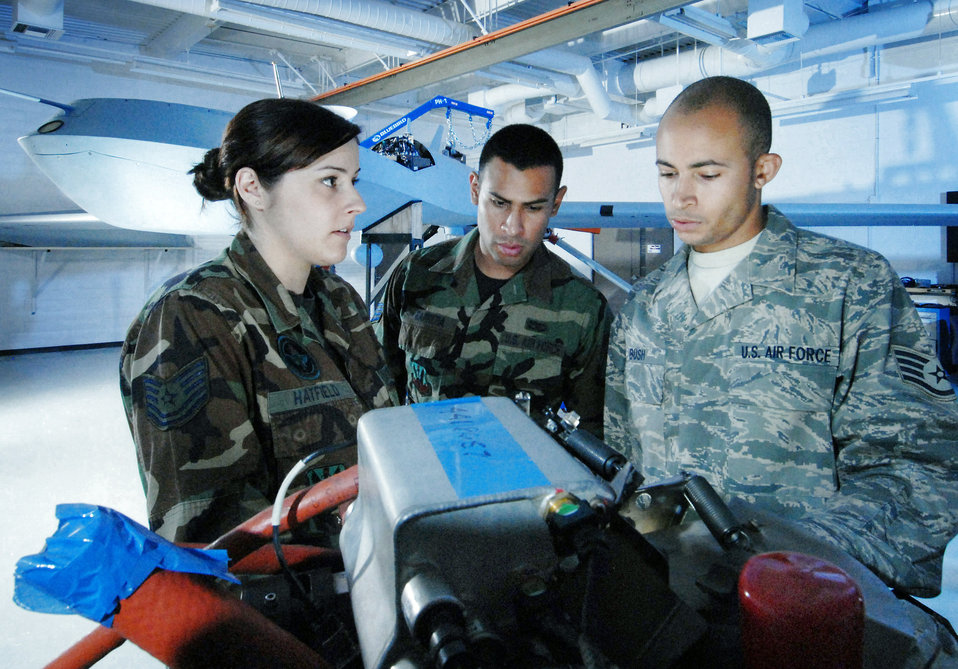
Predator maintenance

Tech. Sgt. Rebecca Hatfield (left), an instructor with Field Training Detachment 26 of the California Air National Guard's 163rd Maintenance Group, shows the components of the engine of an MQ-1 Predator unmanned aircraft to Staff Sgts. Carlos Barrera (center) and Alex Bush Oct. 15. The two sergeants are crew chiefs with the 163rd Reconnaissance Wing at March Air Reserve Base, Calif. Airmen with Det. 26 train active duty, Reserve and Air National Guard personnel on Predator maintenance operations.